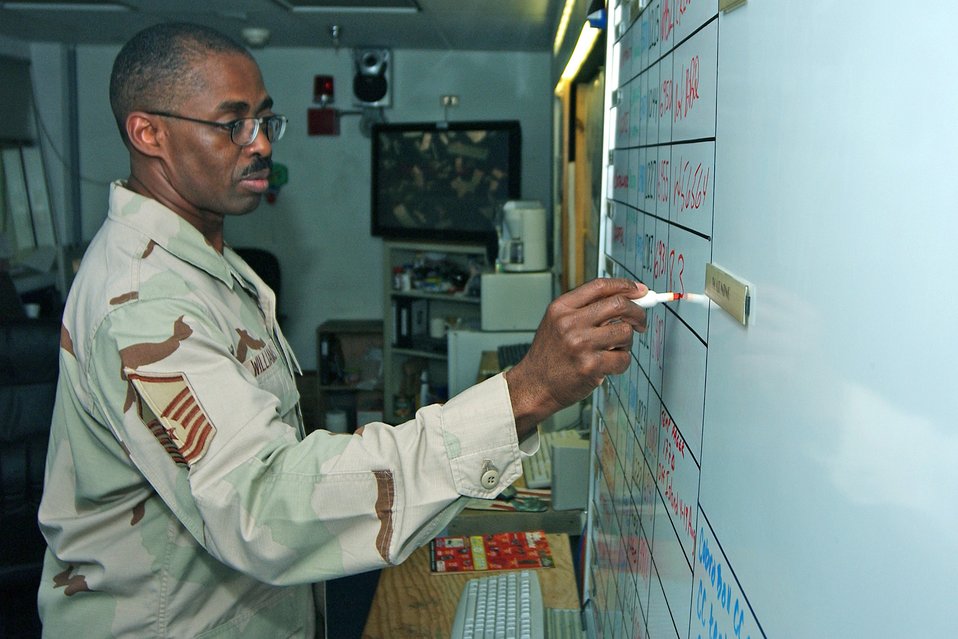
command post

SOUTHWEST ASIA -- Master Sgt. David Williams updates information on the commander's locator board at a forward-deployed location. Sergeant Williams is the command post's chief controller. Controllers are on duty around the clock to ensure key information is relayed to the appropriate agencies.